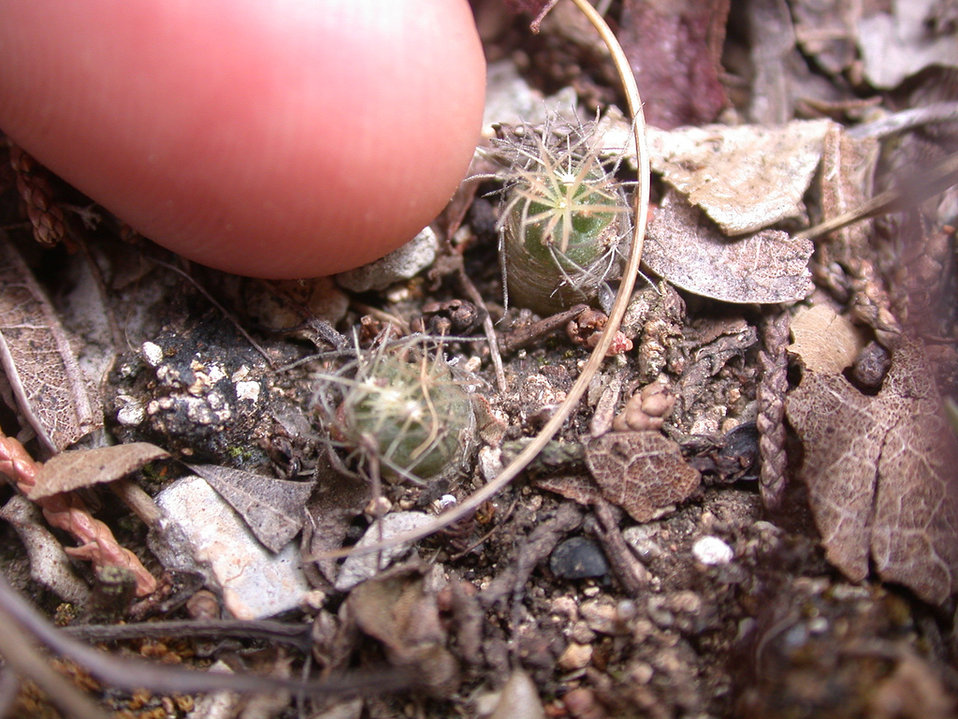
Endangered Tobusch fishhook cactus (Ancistrocactus tobuschii)

U.S. Fish and Wildlife Service biologist, Tim Schumann, examines Tobush protective cages.